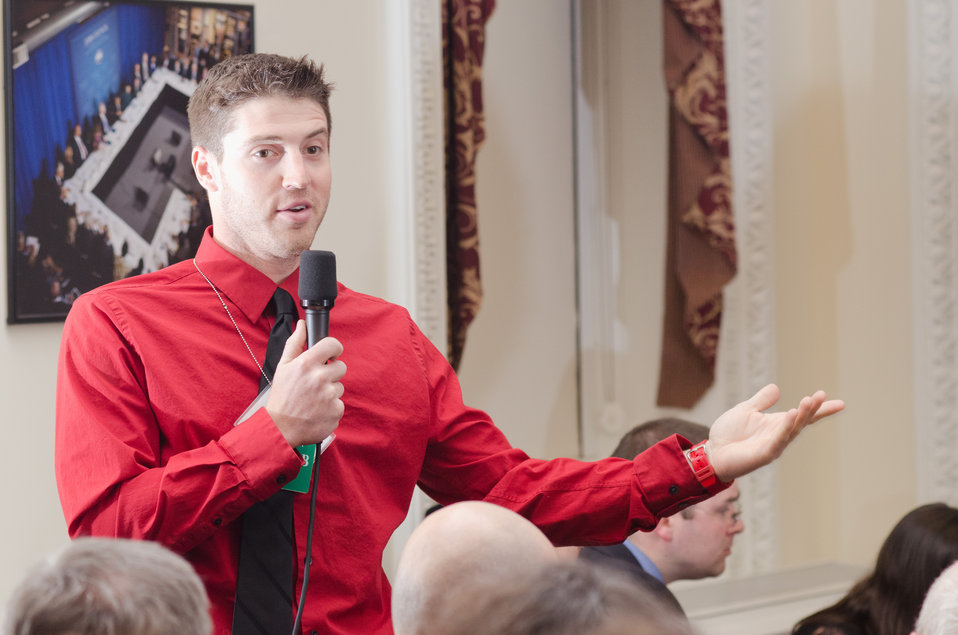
Butlers Orchard's Tyler Butler, part of a MD. family of farmers doing direct sales since the 1950s, speaks during a Know Your Farmer Compass and Geo-spatial mapping tool event hosted by Agriculture Deputy Secretary Kathleen Merrigan (not seen) at the White House, on Monday, March 5, 2012. Mr. Butler is using an Natural Resources Conservation Service (NRCS) funded hoophouse to extend the growing season and diversity farm outputs. The event uses Twitter social media to continues the National Conversation on Local and Regional Food projects and how they offer economic opportunities to local farmers, ranchers and food entrepreneurs.